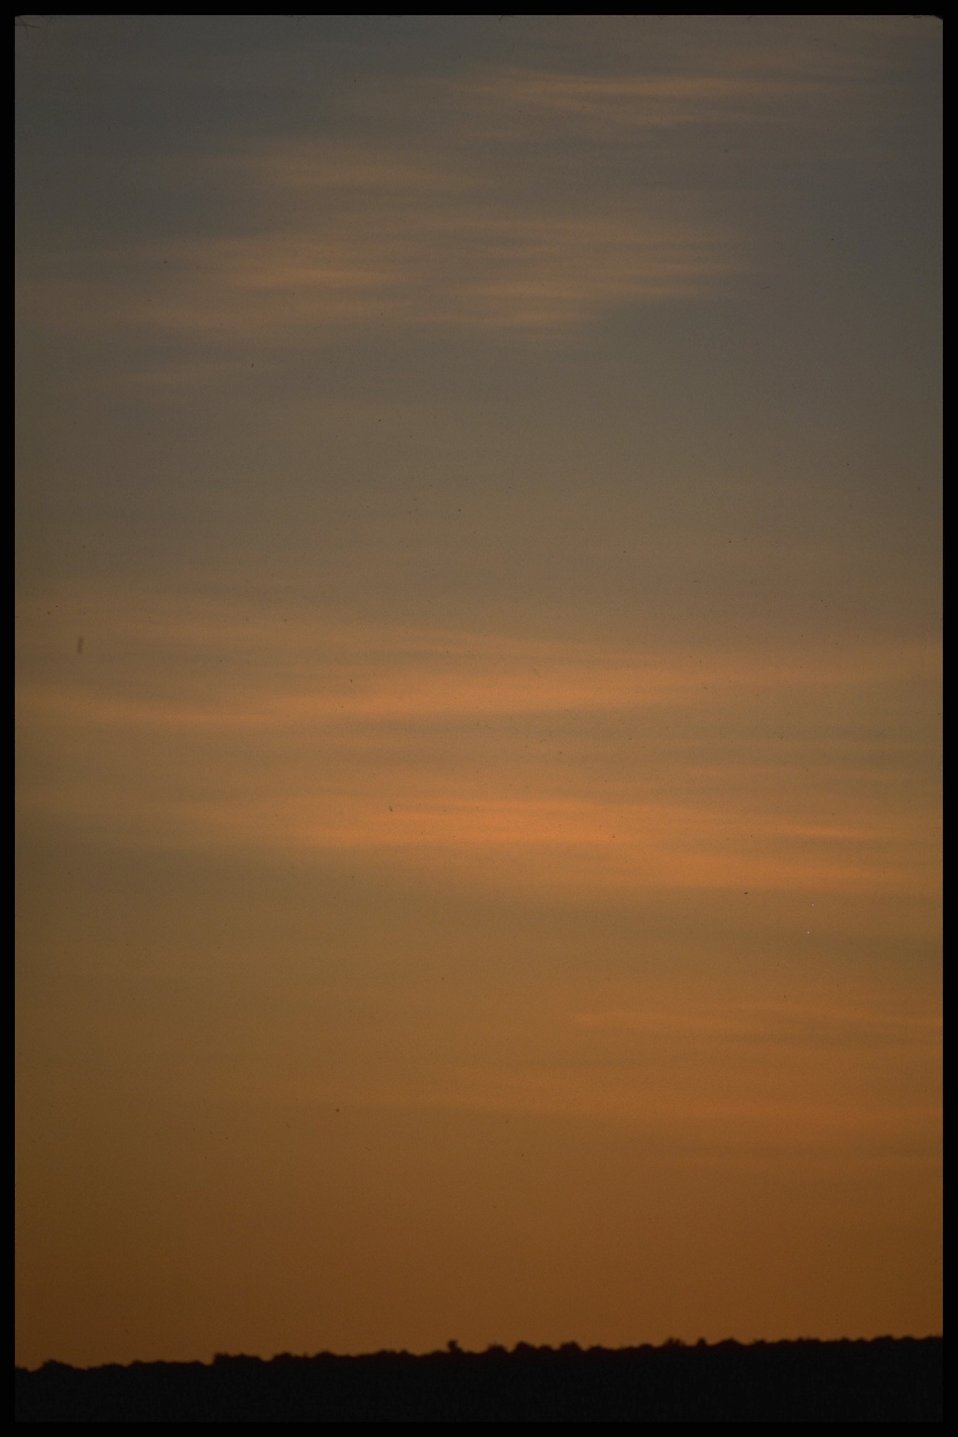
Lakeview District sunrise.